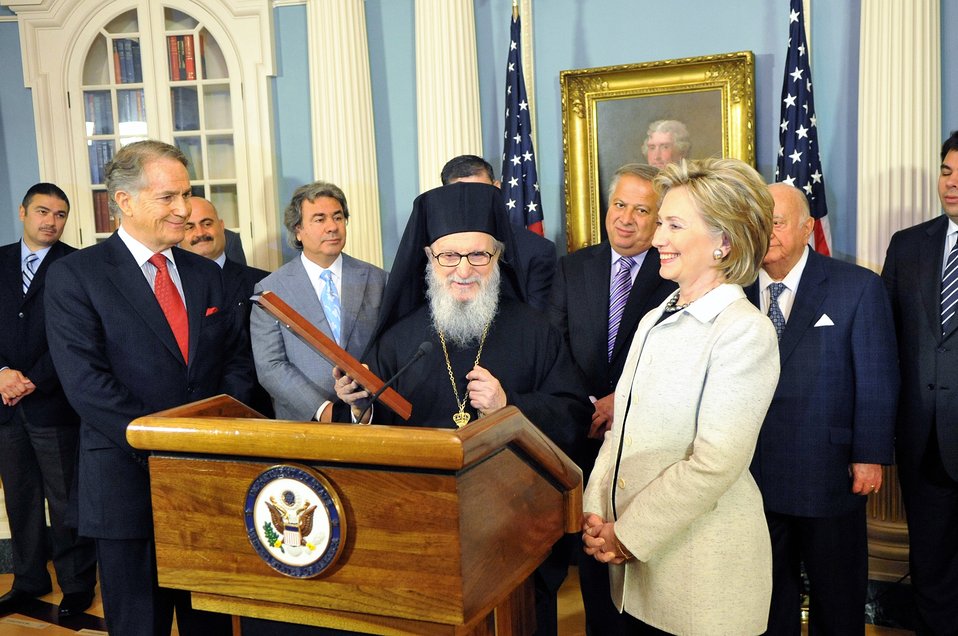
Secretary Clinton Receives National Coordinated Effort of Hellenes Award

U.S. Secretary of State Hillary Rodham Clinton during an awards ceremony with the National Coordinated Effort of Hellenes in the Treaty Room of the U.S. Department of State in Washington, DC May 22, 2009.